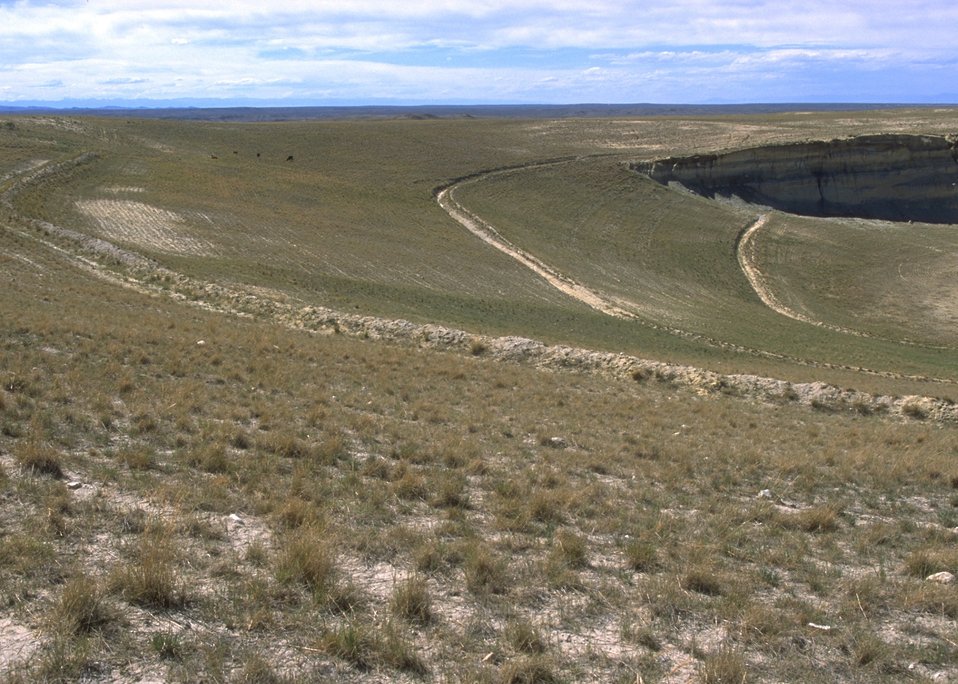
Gas Hill Abandoned Mine Lands in various stages of rehabilitation, Lander Field Office.